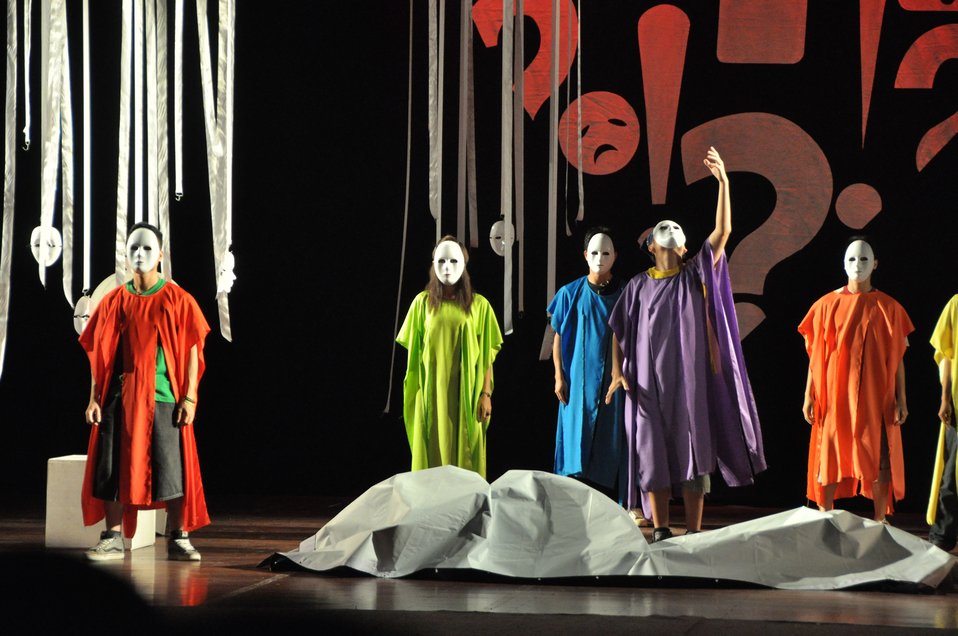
PEPFAR Musical Questions and Exclamations

Hanoi, May 17, 2013